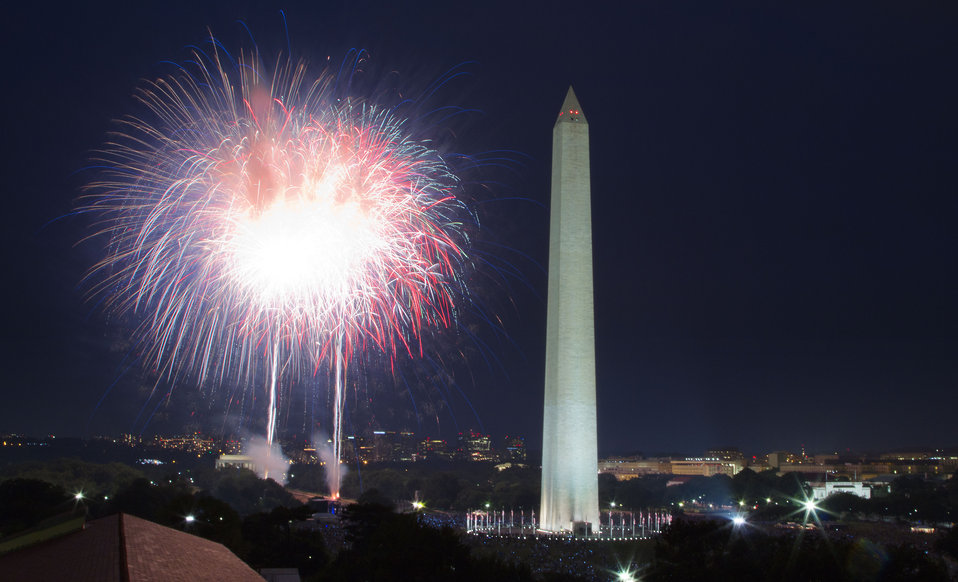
Independence Day fireworks at the National Mall, in Washington, DC, on Monday, July 4, 2011. USDA Media by Lance Cheung.